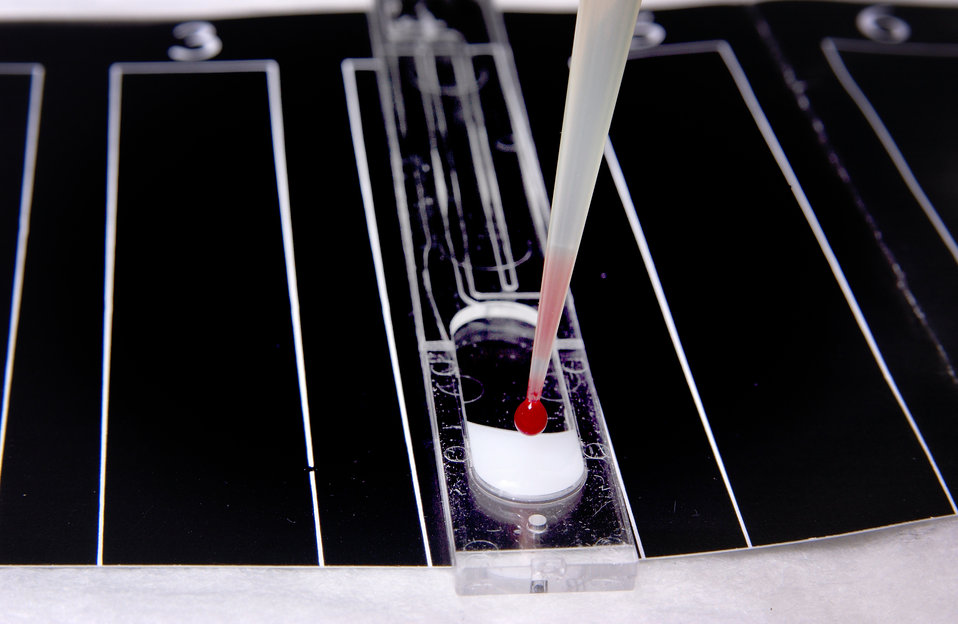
Add the specimen to the CAPILLUS� HIV-1/HIV-2 Rapid Test capillary slide well to mix with the reagent. (Step 8 of 12)